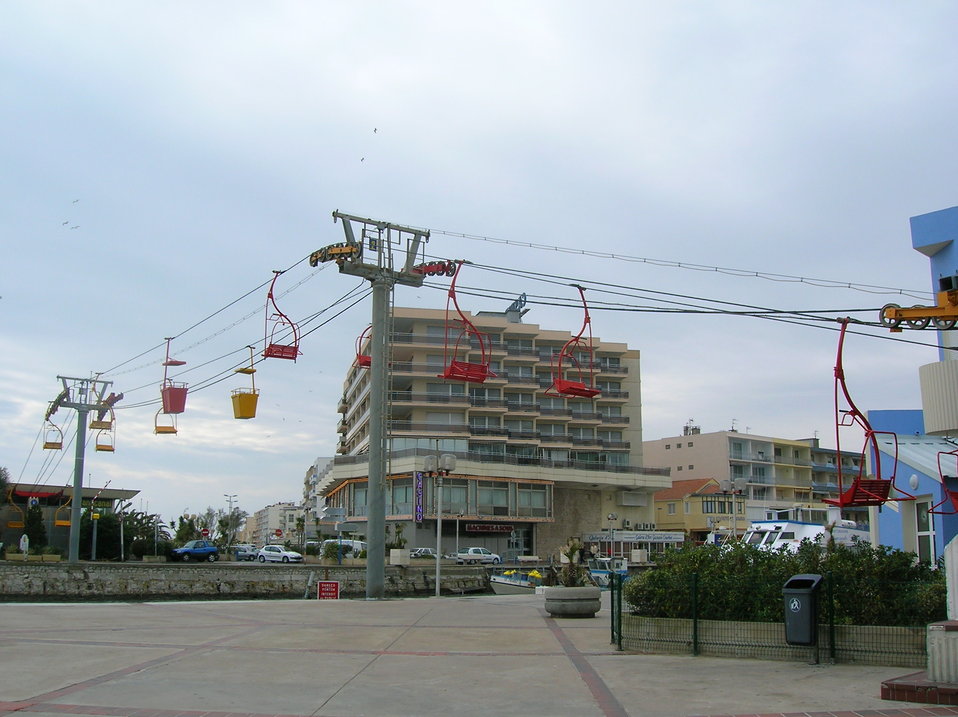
Fran√ßais†: Transcanal √† Palavas-les-Flots